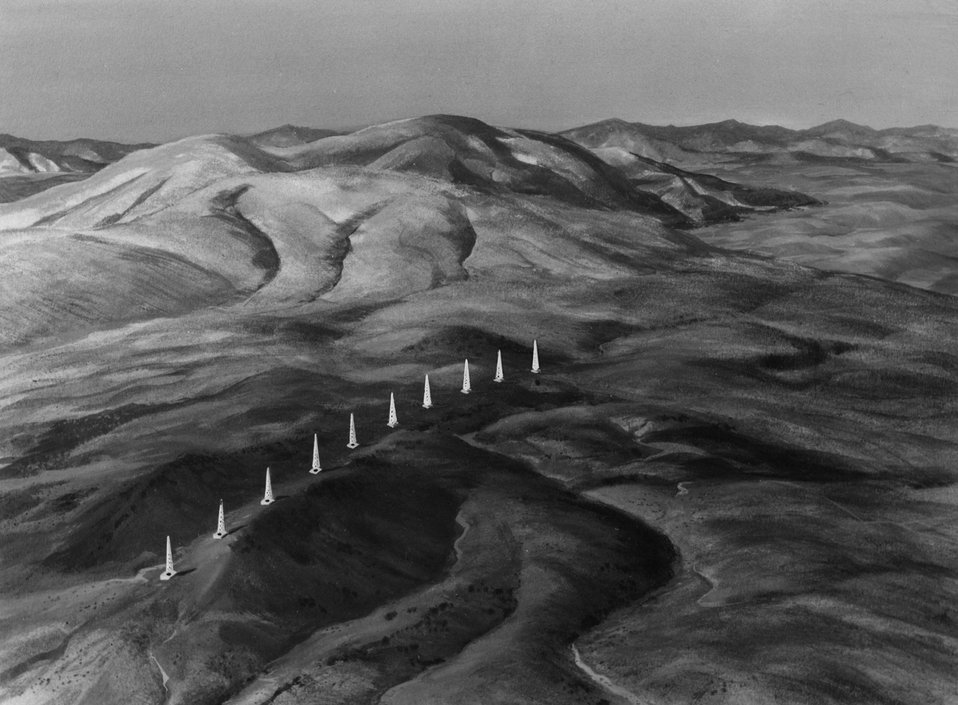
Artist's concept of drill-rigs preparing emplacement holes for a row of nuclear explosives to be used to excavate a highway and railway pass through a mountainous area. c. 1966